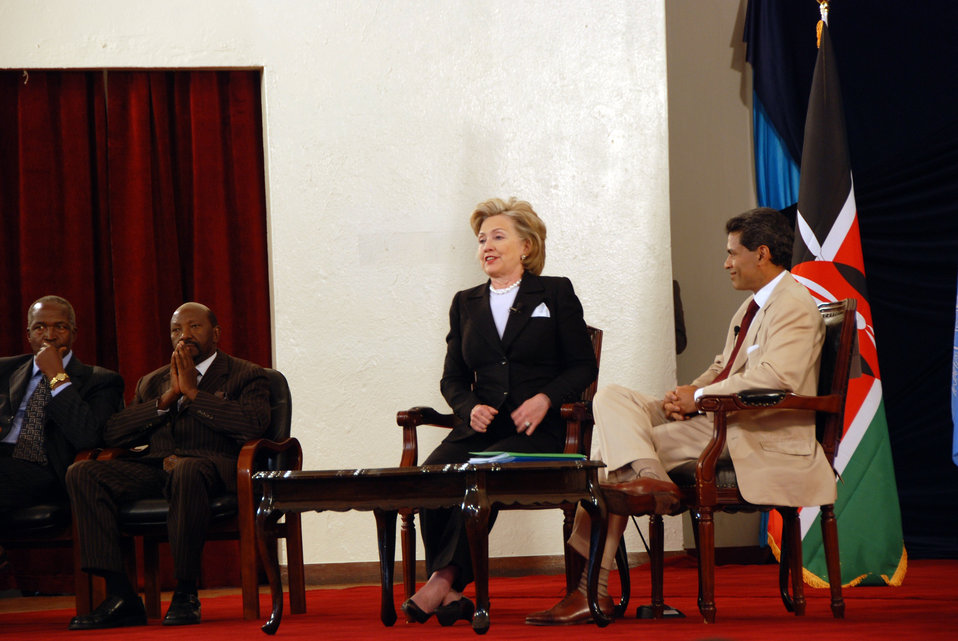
Secretary Clinton Participates in Town Hall Meeting

U.S. Secretary of State Hillary Rodham Clinton participates in a town hall meeting at the University of Nairobi in Nairobi, Kenya August 6, 2009.